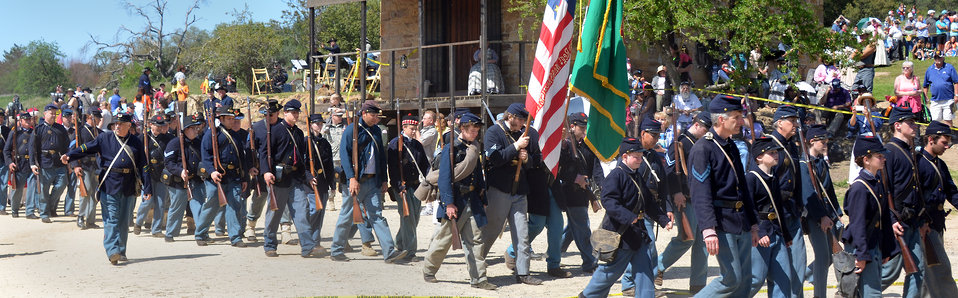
Historic weekend in Knights Ferry

Union troops march through the historic township of Knights Ferry preceding another skirmish during the Civil War reenactment weekend at the U.S. Army Corps of Engineers Sacramento District’s Stanislaus River Parks Calif., March 22, 2014.